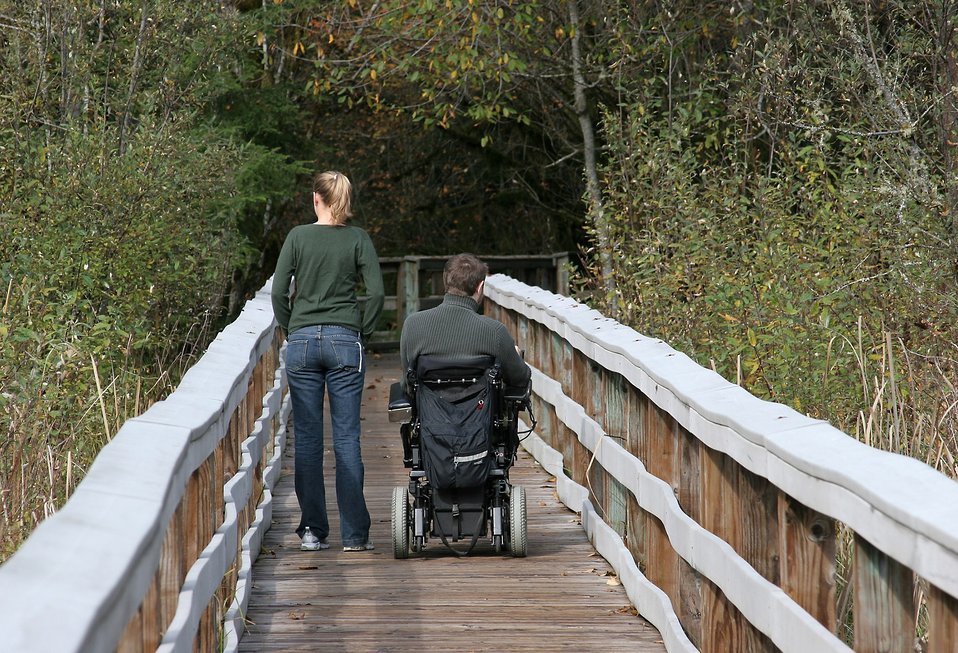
Emily Bubbers and Ian Ruder visit the Wetland Boardwalk Trail at BLM's Wildwood Recreation site near Mt. Hood.